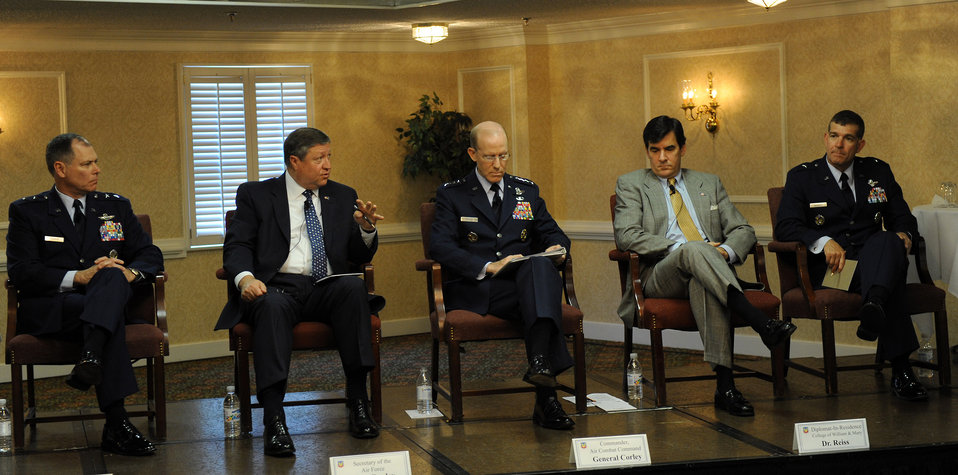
Leadership for the Future

Secretary of the Air Force Michael B. Donley answers a question April 23 during a senior leader panel discussion titled